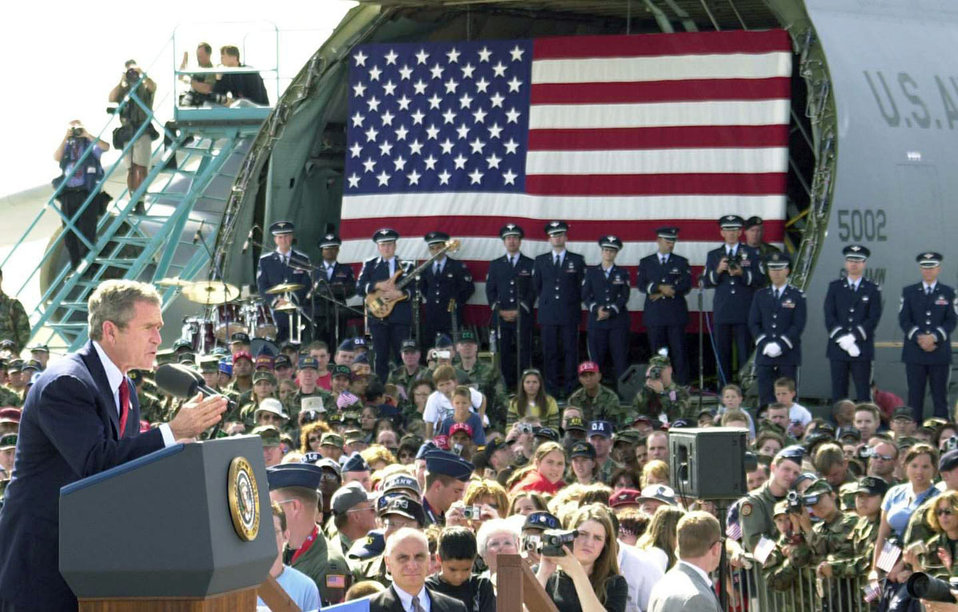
'Failure Not An Option'

TRAVIS AIR FORCE BASE, Calif. -- President George W. Bush stresses to the crowd the point that America,